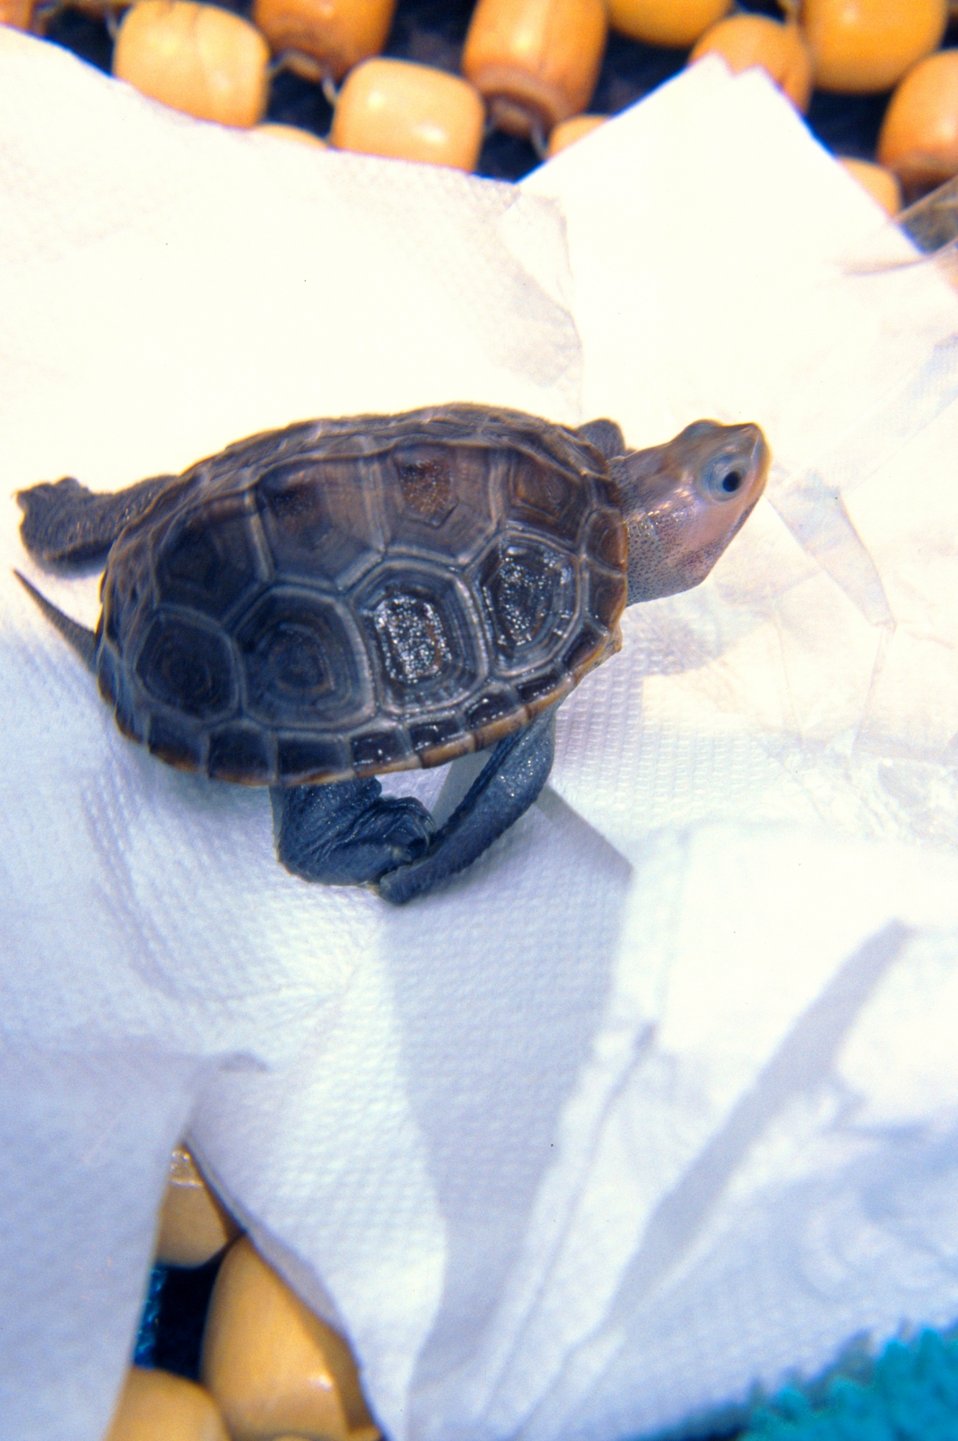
Baby diamondback terrapin, Malachlenys terrapin.